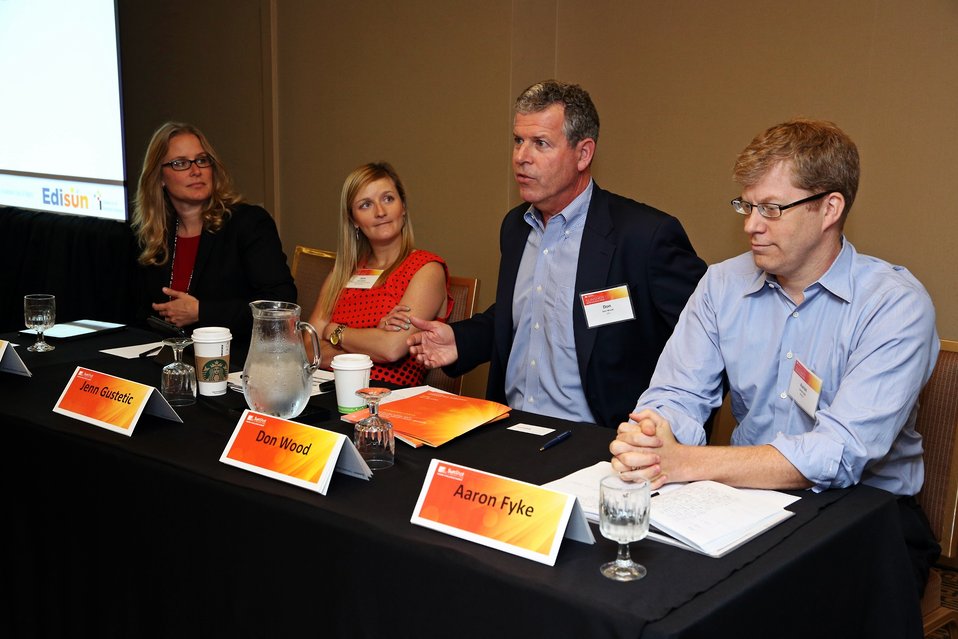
Breakout Sessions 17